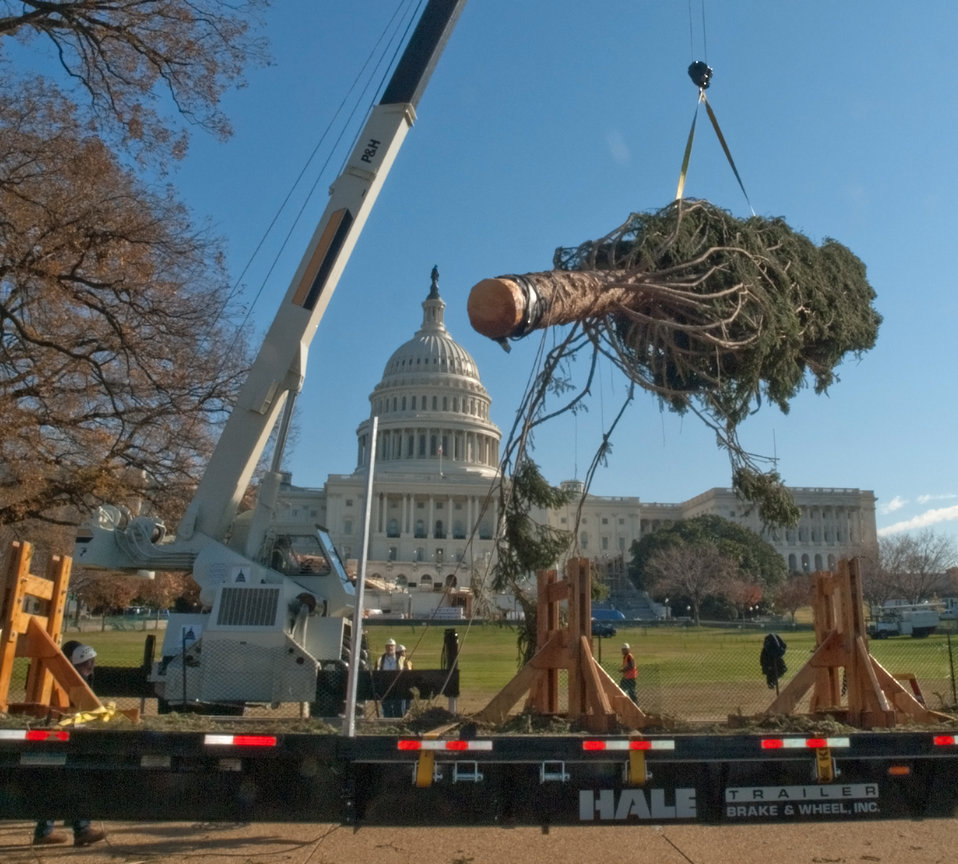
Members of the Capitol grounds crew move the 2012 Capitol Christmas Tree from its truck after it arrived in Washington, D.C. on Nov.26, 2012. The 73-foot Englemann spruce traveled from the White River National Forest in Colorado.